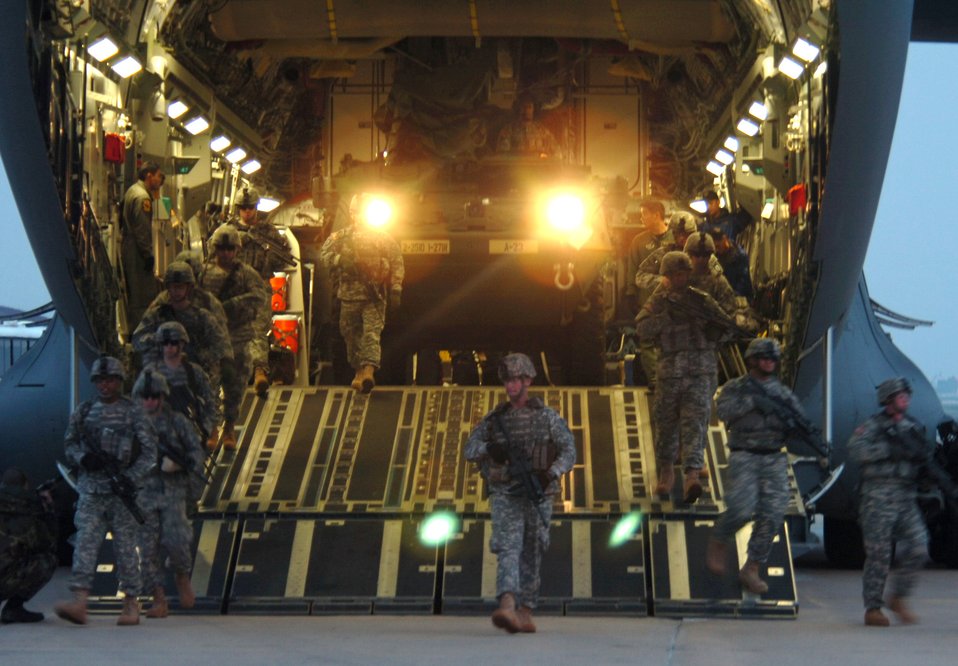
Globemaster delivers to Foal Eagle 2007

Soldiers from the 27th Infantry Division spread out to provide security as an M1126 Stryker infantry carrier vehicle is offloaded from a C-17 Globemaster III March 18 in Daegu, South Korea, for Exercise Foal Eagle 2007. The focus of the exercise is on strategic, operational and tactical aspects of general military operations in the Korean theater of operations. Its intent is to demonstrate resolve to support the Republic of Korea against external aggression while improving ROK - U.S. combat readiness and joint and combined interoperability. The C-17 is from the 15th Airlift Wing at Hickam Air Force Base, Hawaii.